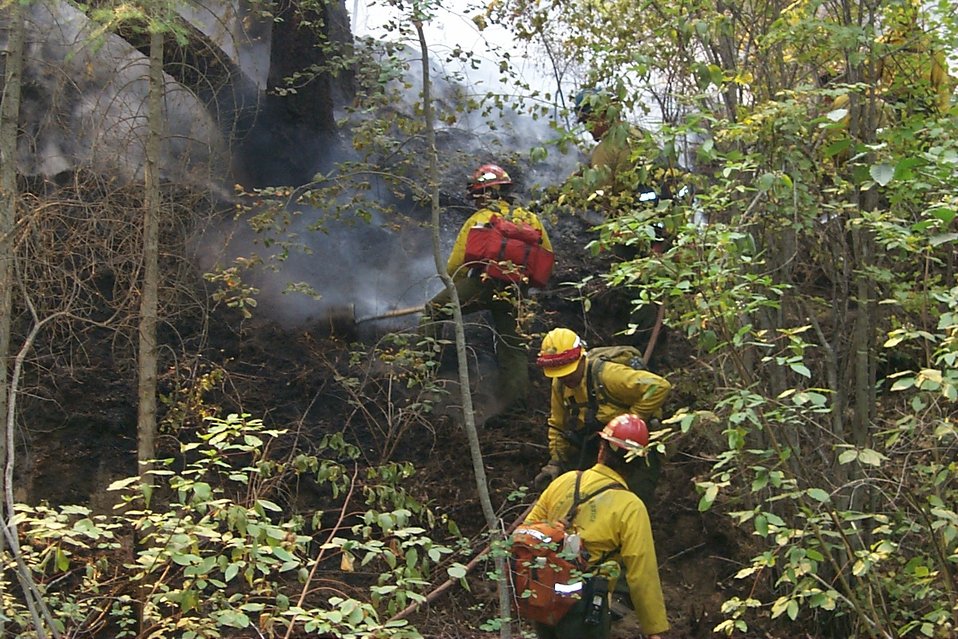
Fire fighters Fire Clearwater Fire Salmon Field Office USRD Upper Snake River District